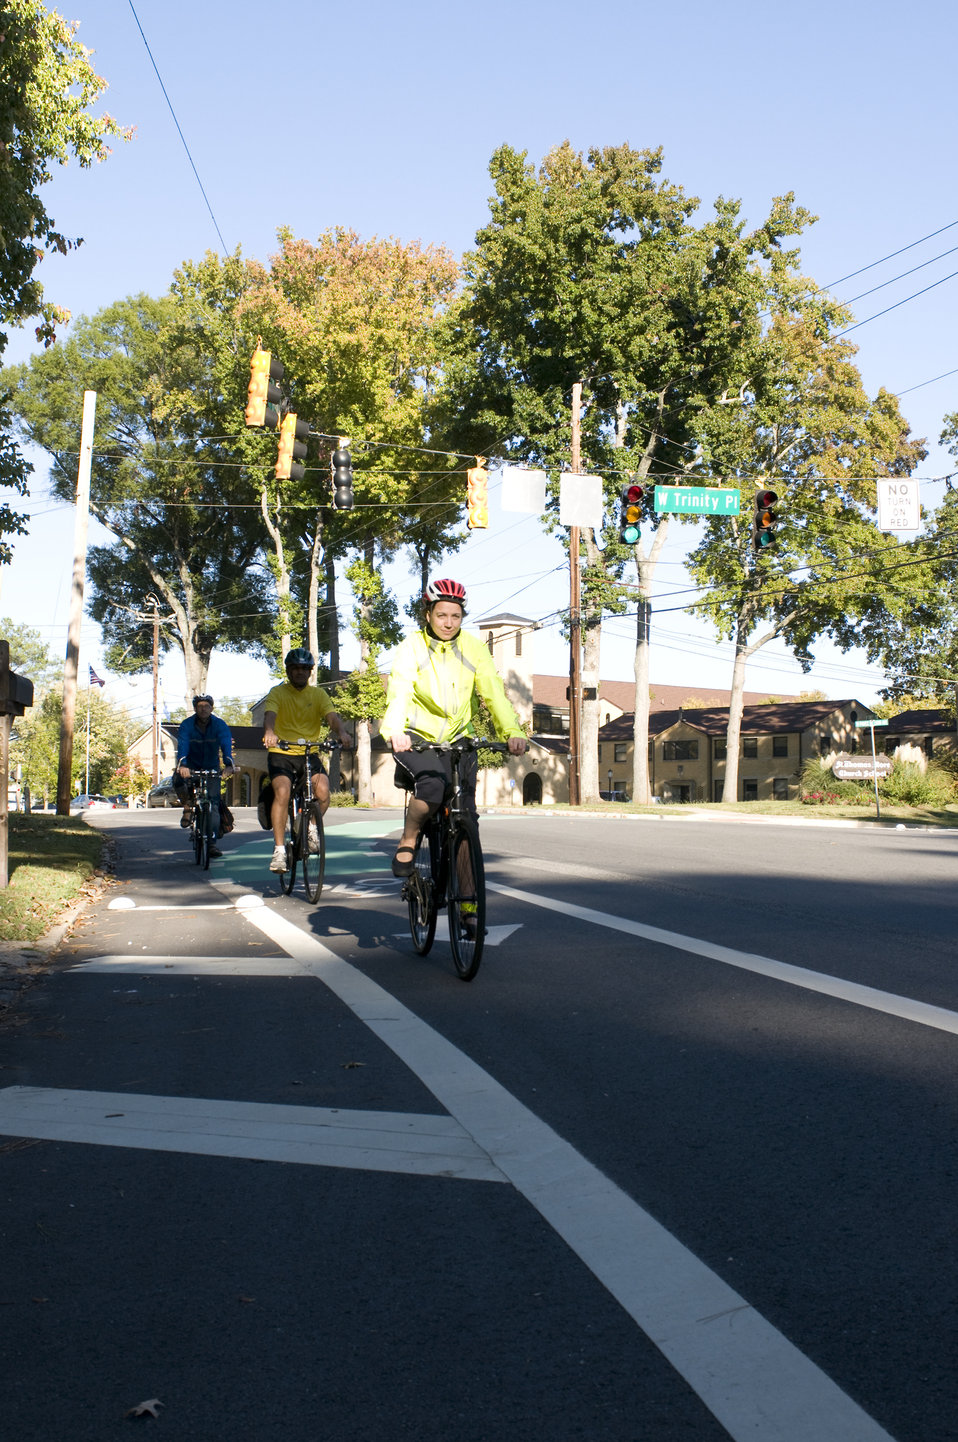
Photographed on a sunny Georgia day were three bicyclists who had embarked on a morning bicycle ride. Note the brightly-colored clothing they were wearing, which would help drivers see them more easily, as well as the protective, aerodynamic helmets, and the snug leggings, all adding to an overall safer bike ride for all. Also important, is that they were riding in the designated bicycle traffic lane, and abiding by the proper rules of the road, which govern drivers of both bicycles, and motorized vehicles.